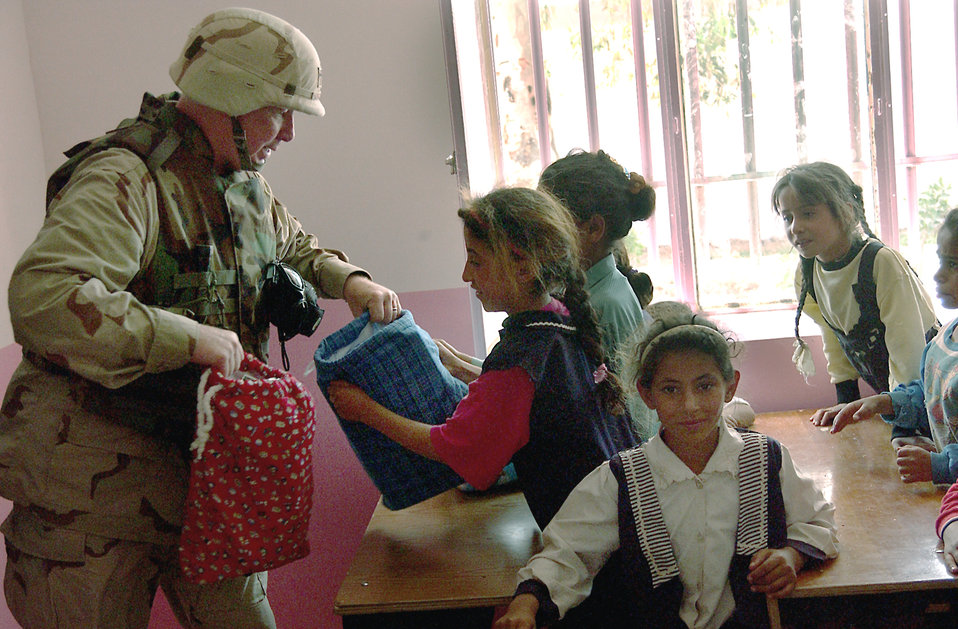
Gifts from America

BALAD AIR BASE, Iraq -- Chaplain (Lt. Col.) Glenn Rogers hands out bags of school supplies to Iraqi children at a village near here as part of a humanitarian mission. About 30 Airmen and Soldiers traveled to the village to hand out school supplies and toys to the children that had been collected by children from several schools in Florida. Chaplain Rogers is assigned to the 332nd Air Expeditionary Wing.